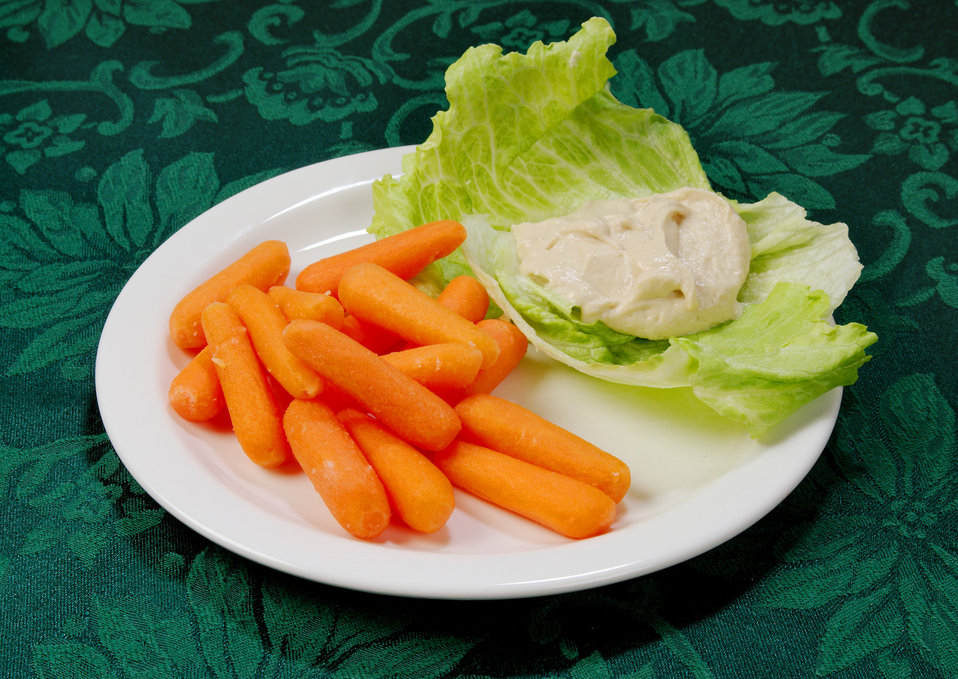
The carrots on this plate are an excellent source of Vitamin A, which is necessary for healthy eyesight, skin, growth, and also aids our bodies in resisting infection, and potassium.